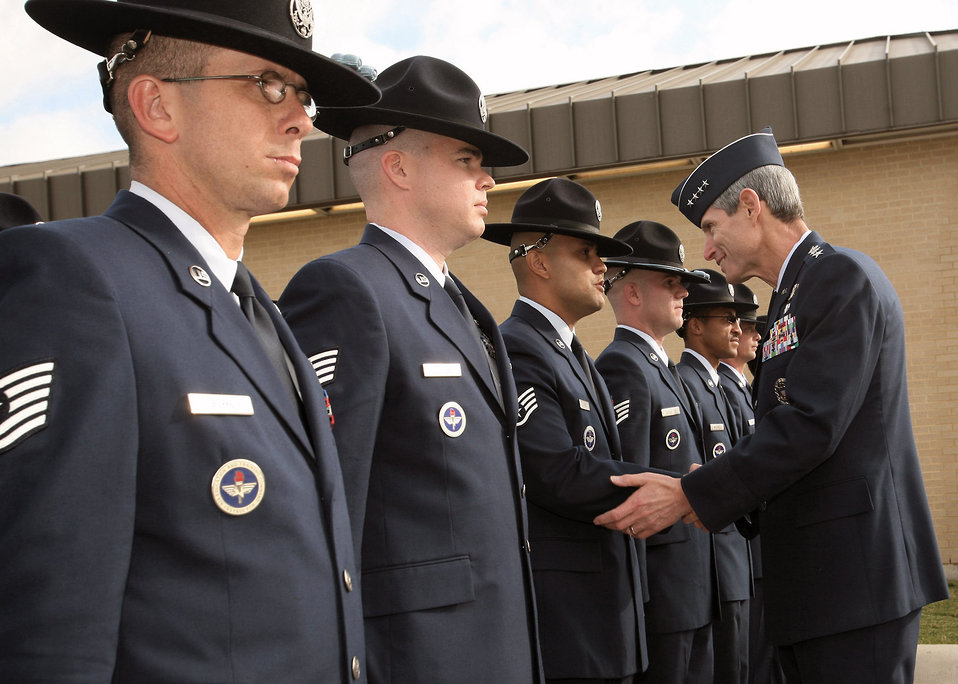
Chief of staff reviews parade

Gen. Norton Schwartz shakes hands with Staff Sgt. Hector Paiz after a Basic Millitary Training graduation Oct. 31 at Lackland Air Force Base, Texas. While on base, General Schwartz administered the oath of enlistment to basic training graduates and served as the reviewing official for the BMT parade. General Schwartz is the Air Force chief of staff. Sergeant Paiz is assigned to the 331st Training Squadron.